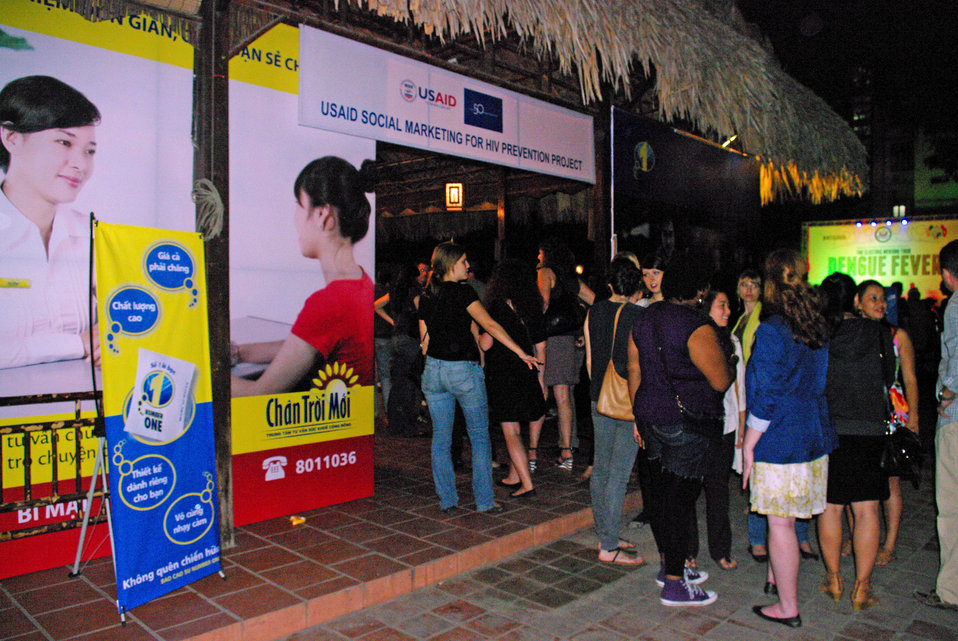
PEPFAR, U.S. Embassy Host Dengue Fever Concert in Hanoi